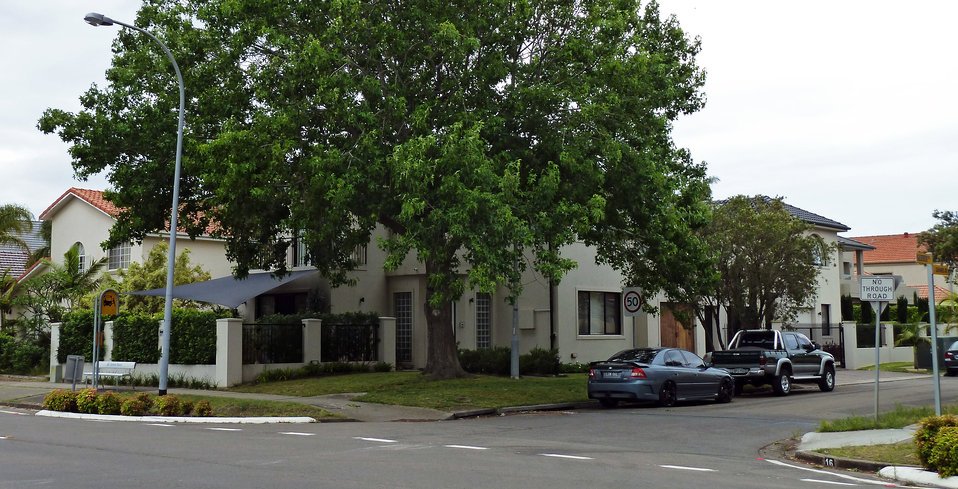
14 Malua Street, Dolls Point, New South Wales, Australia.